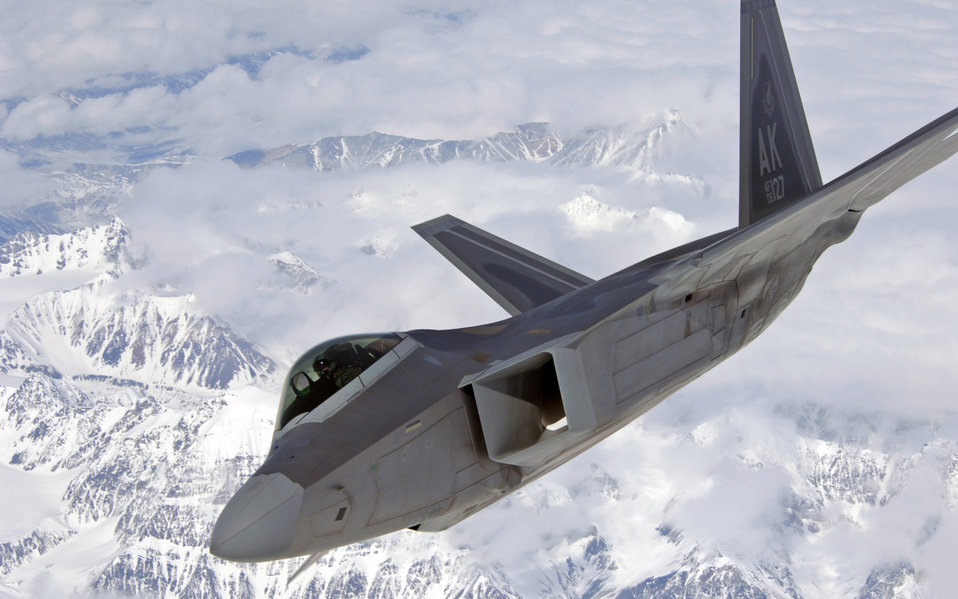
Ready to rock

An F-22 Raptor veers to the right over Alaska's mountainous terrain April 15 after an in-flight refueling mission. The Raptor was one of several refueled by a KC-135 Stratotanker before returning to Elmendorf Air Force Base, Alaska.